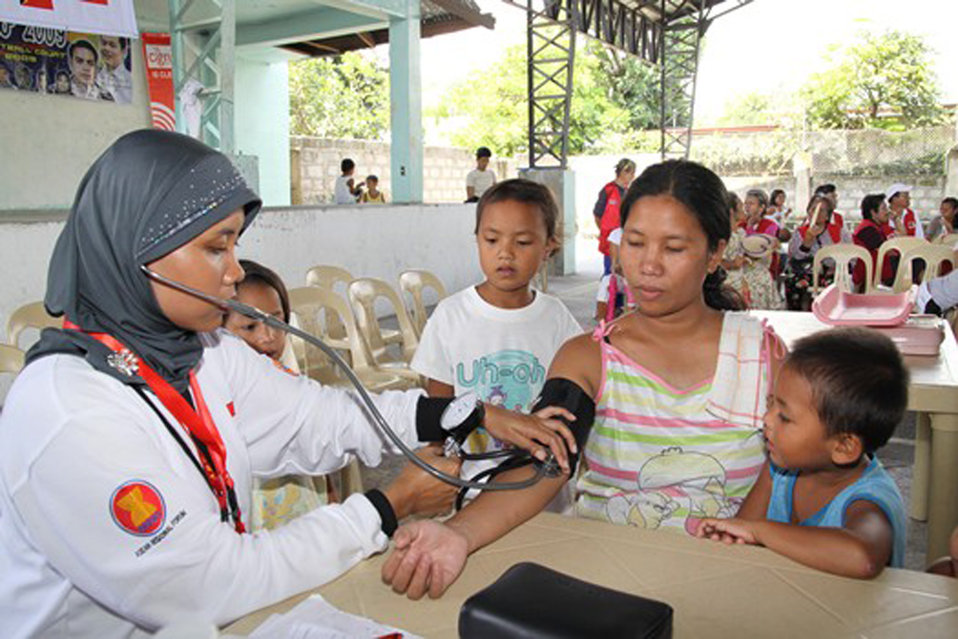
Multinational medical assistance aids Filipino community

A medic checks the pulse of a Filipino patient during the 2009 Association of Southeast Asian Nations Regional Forum Voluntary Demonstration of Response on Disaster Relief May 4 at Sapang Bato, Philippines. Civilian and military medical professionals from the United States, Japan, Australia, Indonesia and Papua-New Guinea are in the Philippines to provide medical care in areas of need.